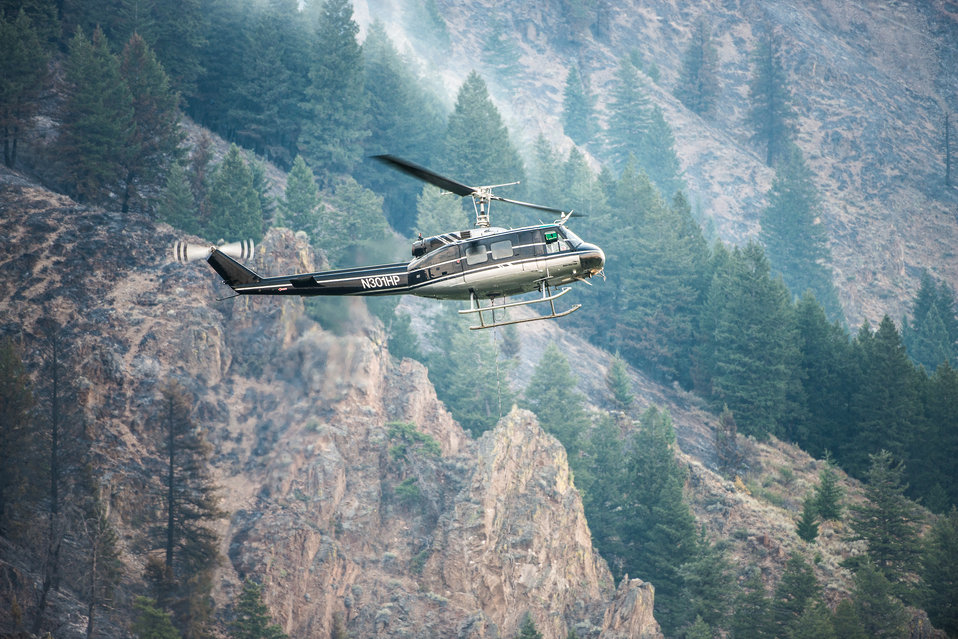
A Bell UH-1H helicopter performs water drops on fires, on the Carbonate Ridge, rising behind the Wood River, during Beaver Creek Fire, west of Hailey, ID, on Monday, Aug 19, 2013.